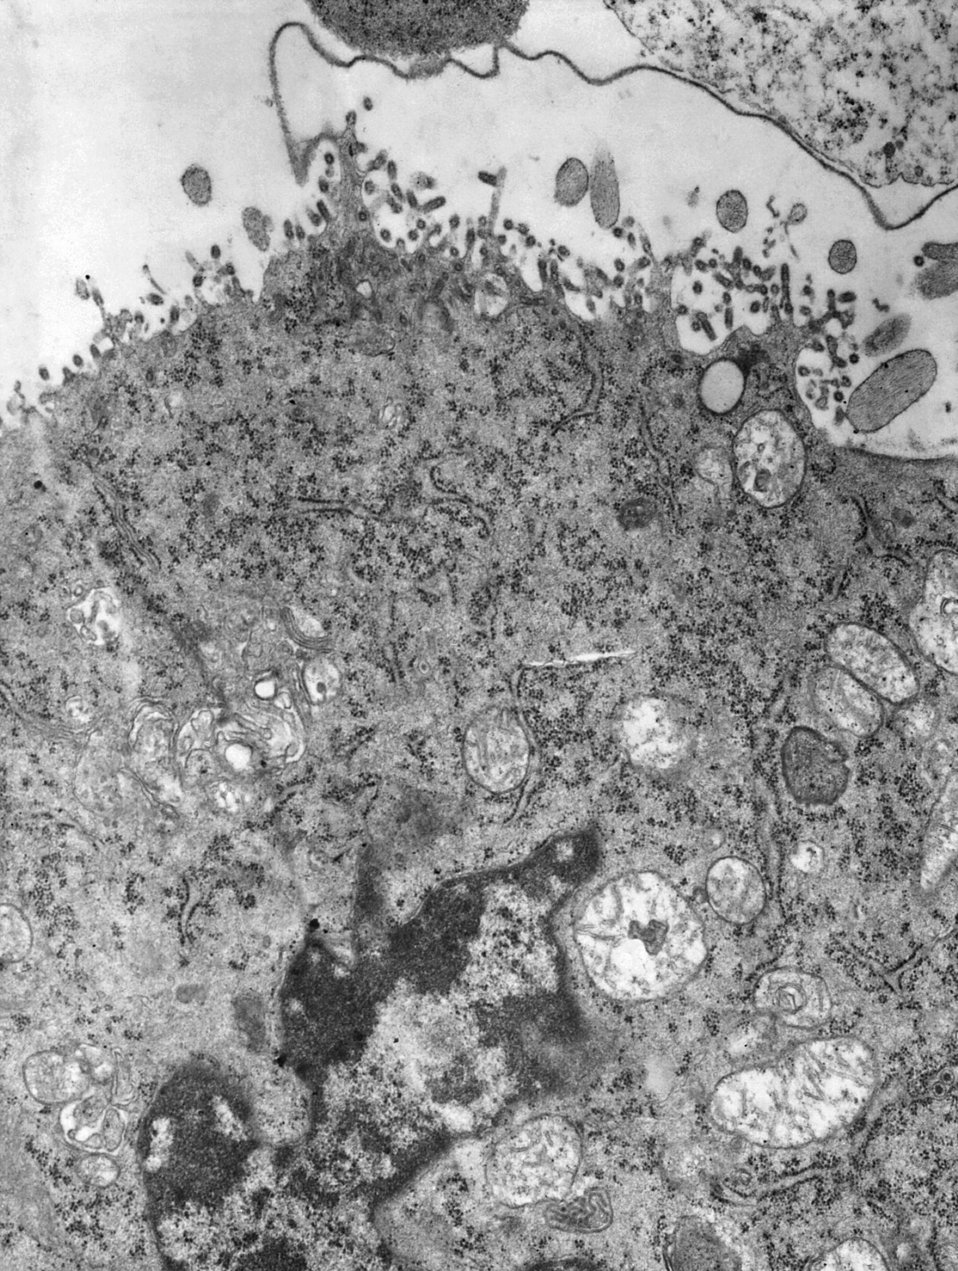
This negatively-stained transmission electron micrograph (TEM) revealed the presence of numerous Piry virus virions, many of which could be seen as they were 'budding' from the host cell, thereby, becoming free to migrate throughout the host's system. Note the 'bullet-like' shape of the small 155nm x 162nm virions, as they're freed from the host cell. Normally, under electron microscopic examination, the virions are observed as being discoidal or spheroidal in shape, and only rarely as bullet-shaped, as was the case here.